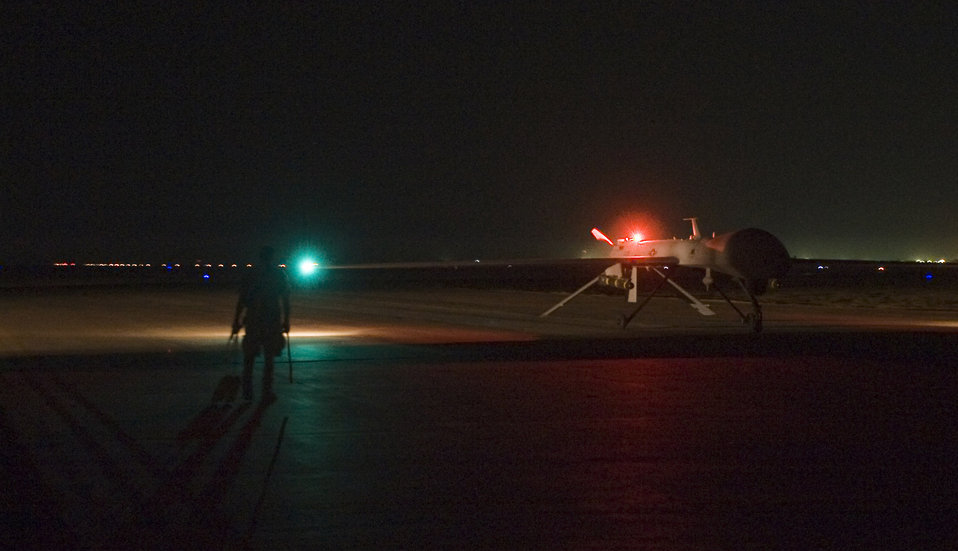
Predator preparations

An MQ-1 Predator taxies on the flightline after a mission Sept. 3 at Ali Base, Iraq. The unmanned aircraft system is assigned to the 46th Expeditionary Reconnaissance Attack Squadron Det. 1. Through the use of advanced capabilities, focused doctrine and detailed training, the Predator provides integrated and synchronized close air combat operations, to include intelligence, surveillance and reconnaissance.